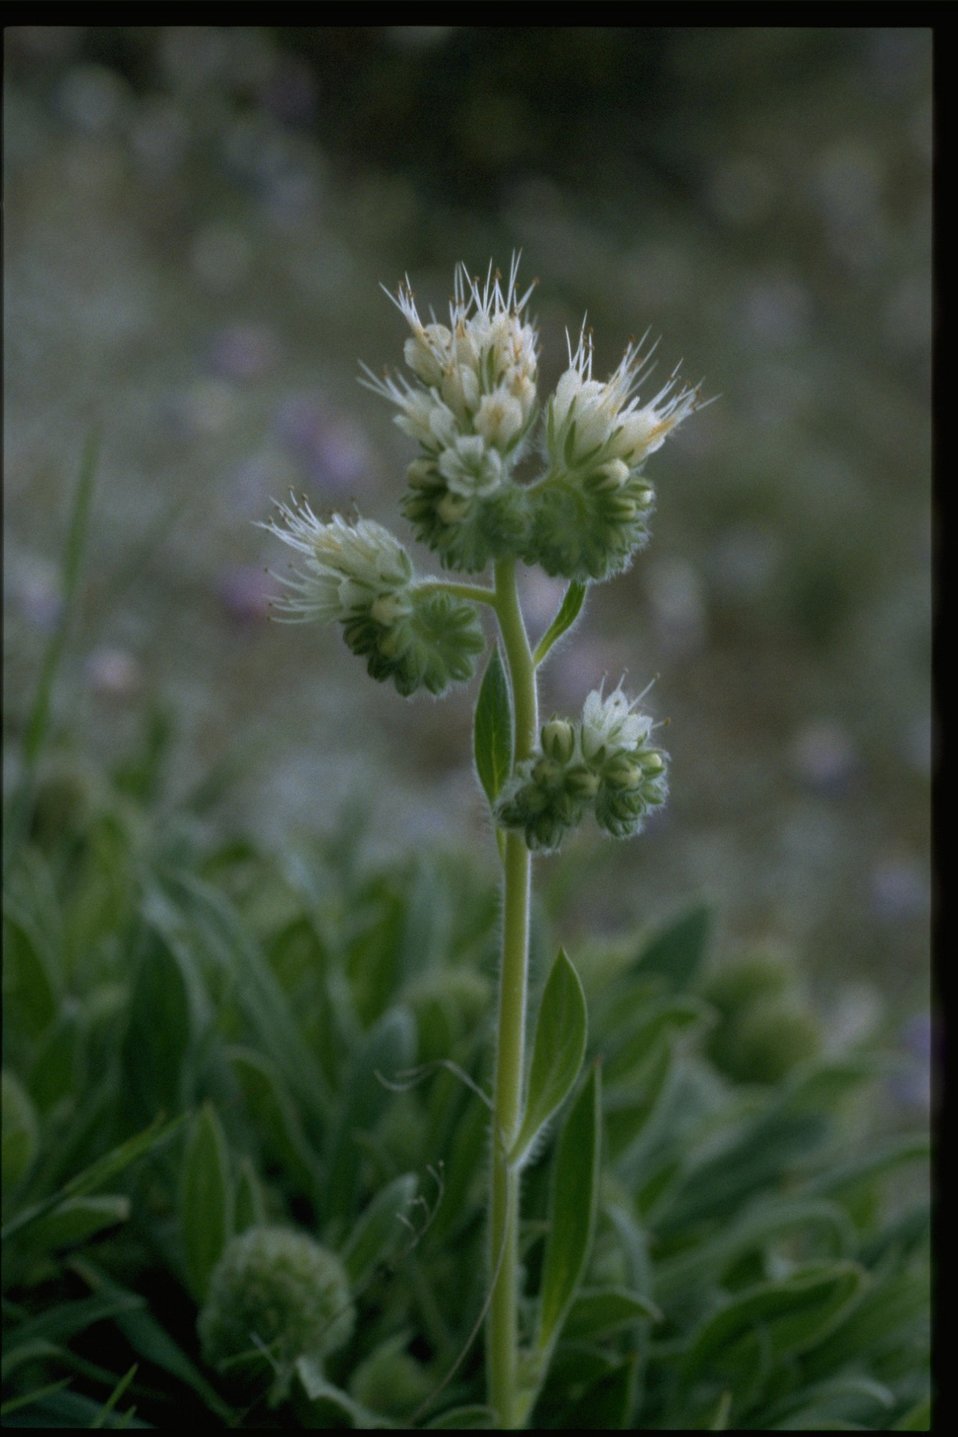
Medium shot of Phacelia corymbosa.